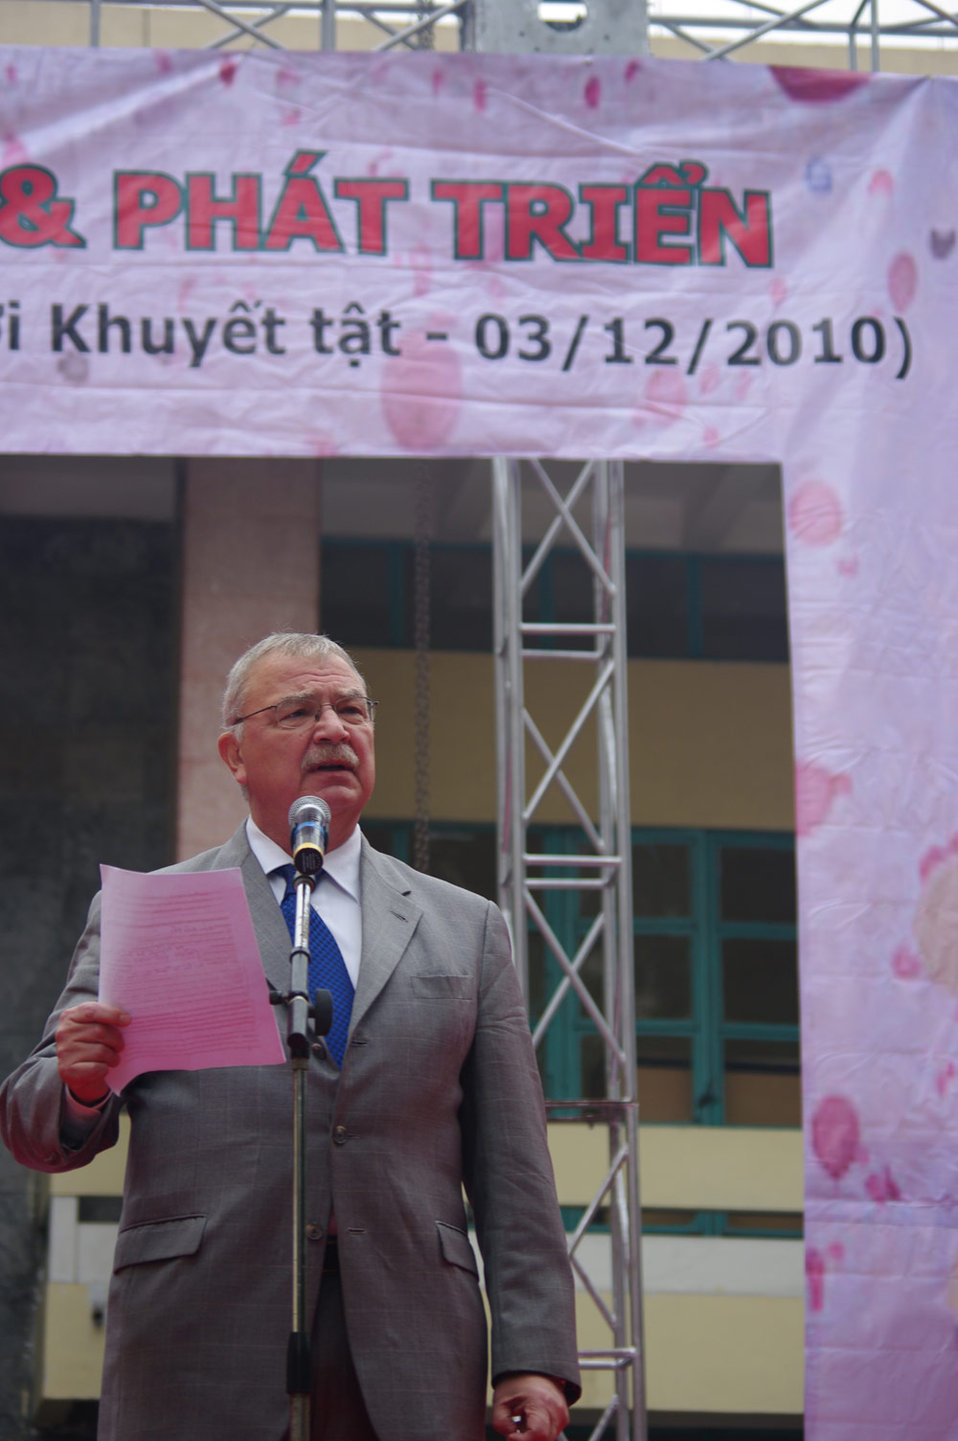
International Day of Persons with Disabilities 2010